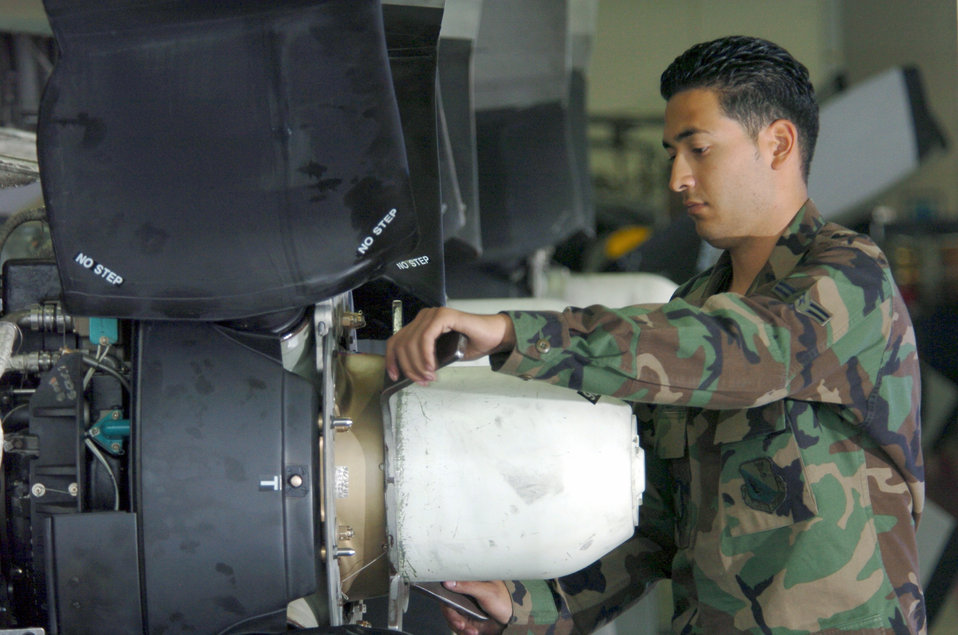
Routine checkup

YOKOTA AIR BASE, Japan -- Airman 1st Class Francisco Anglin secures the dome assembly of a C-130 Hercules during a routine inspection. Airman Anglin is a mechanic from the 374th Maintenance Squadron and works at the T-56 Engine Regional Repair Center here. Center workers repair all C-130 cargo aircraft engines within Pacific Air Forces.